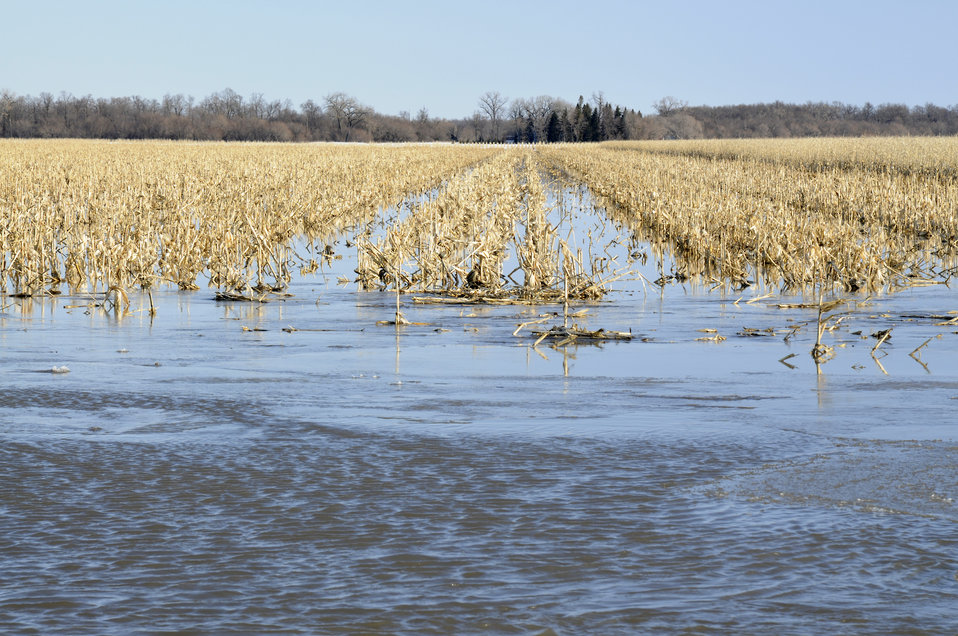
Farmland was under water in North Dakota on April 8, 2009 due to the Red and Missouri Rivers overflowing their banks. North Dakota received abnormally heavy winter snows atop saturated and frozen ground, which was already saturated when it froze at the beginning of winter, melting snow which could not be absorbed by the frozen ground, additional precipitation from a rain storm on March 22, 2009 and a late snowstorm at the end of the month added to the existing snowpack.